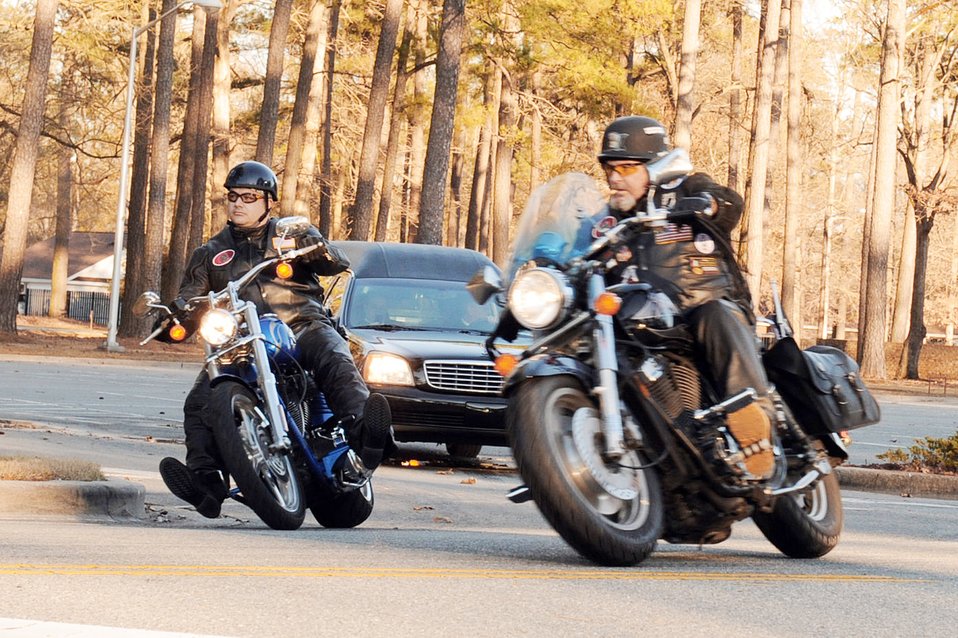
Team Seymour honors fallen Airman

Members of the Patriot Guard Riders escort the remains Tech. Sgt. Adam Ginett, a fallen explosive ordnance disposal technician, Jan. 25, 2010, off Seymour Johnson Air Force Base, N.C., after a dignified transfer ceremony.